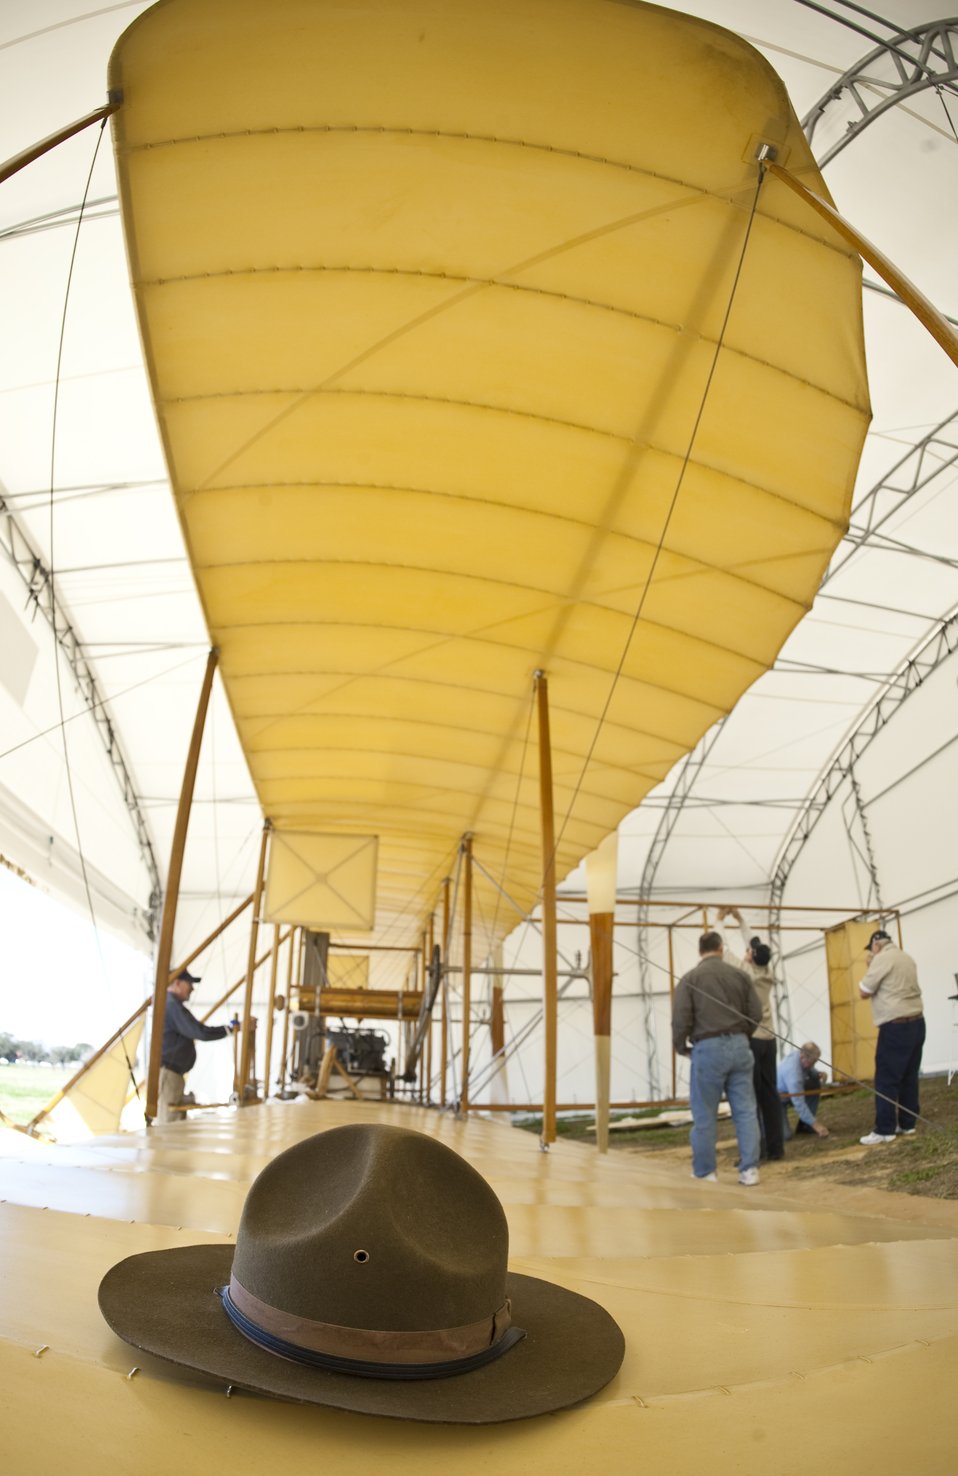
Wright

An early Army style hat lays on the lower wing of a Wright